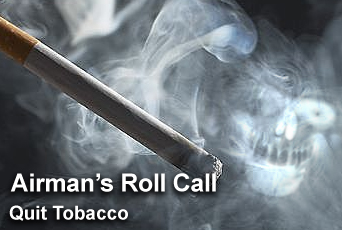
Airman's Roll Call: Quit smoking

This week's Airman's Roll Call offers Airmen who smoke a new resource to help them quit tobacco.